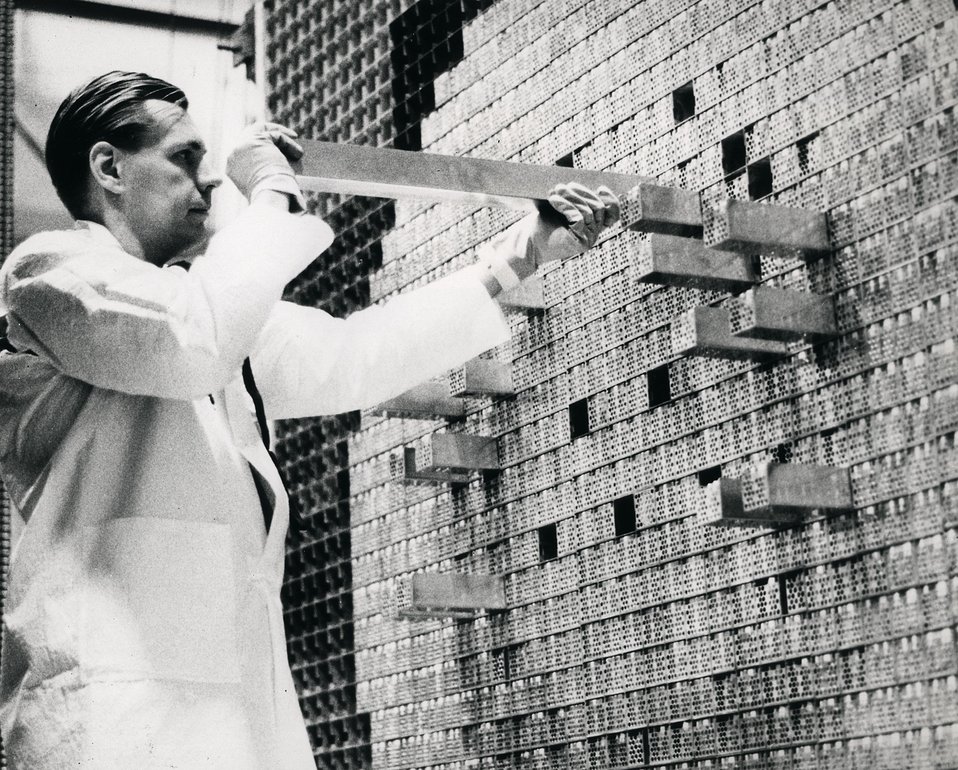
One of the matrixes of the ZPR VI reactor is loaded prior to its first operation using plutonium fuel.
c.1970